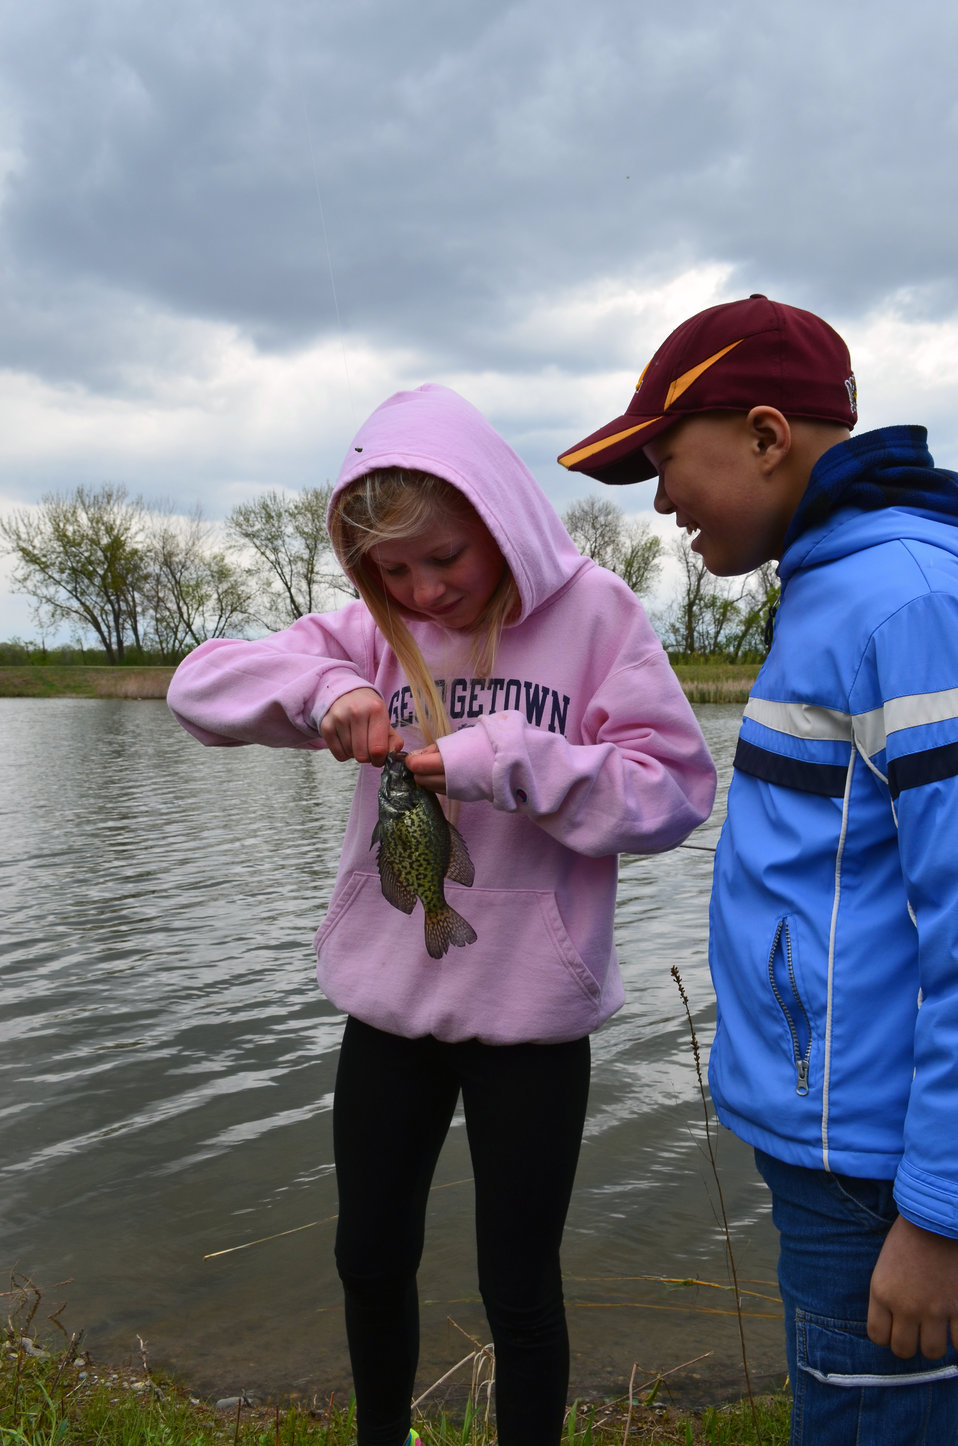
First fish of the day!